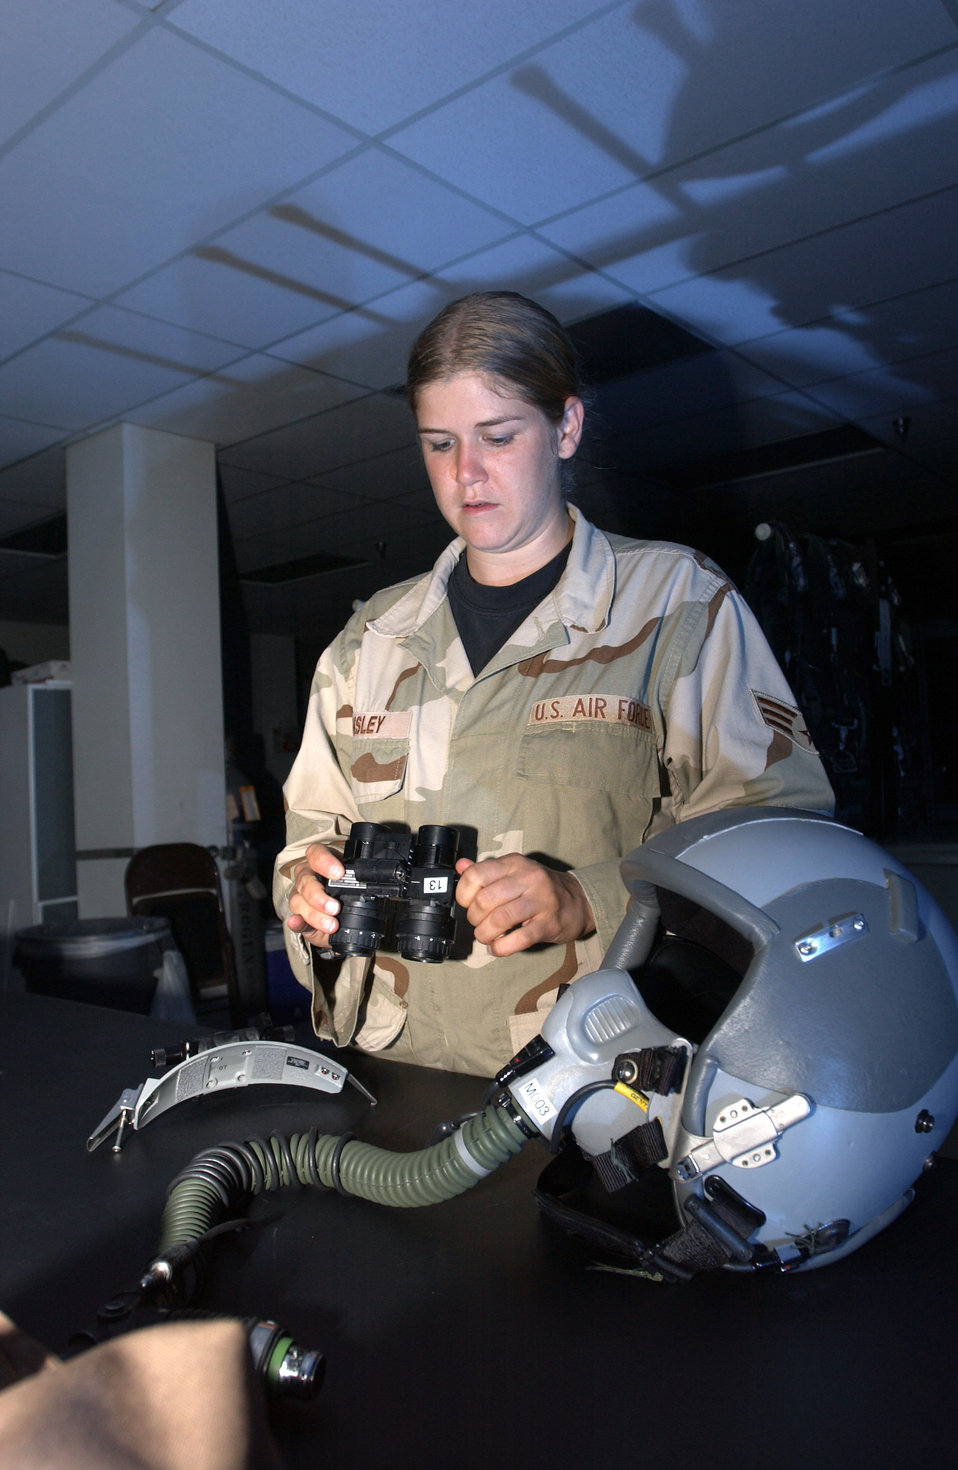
Life support takes new meaning for deployed Airmen

OPERATION ENDURING FREEDOM -- Senior Airman Karen Ainsley inspects night-vision goggles before attaching them to a pilot's helmet. She is a life support journeyman with the 23rd Expeditionary Bomb Squadron.